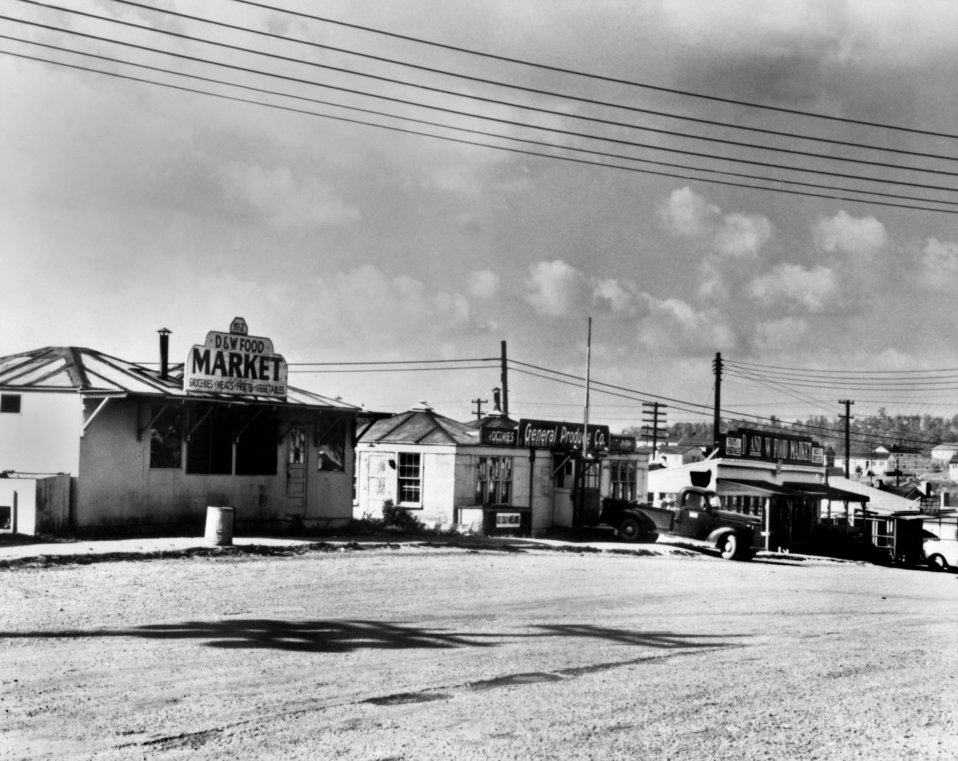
Turnpike and LaFayette Shopping Center Oak Ridge

92-5245 DOE photo by Ed Westcott 1940s Oak Ridge Tennessee